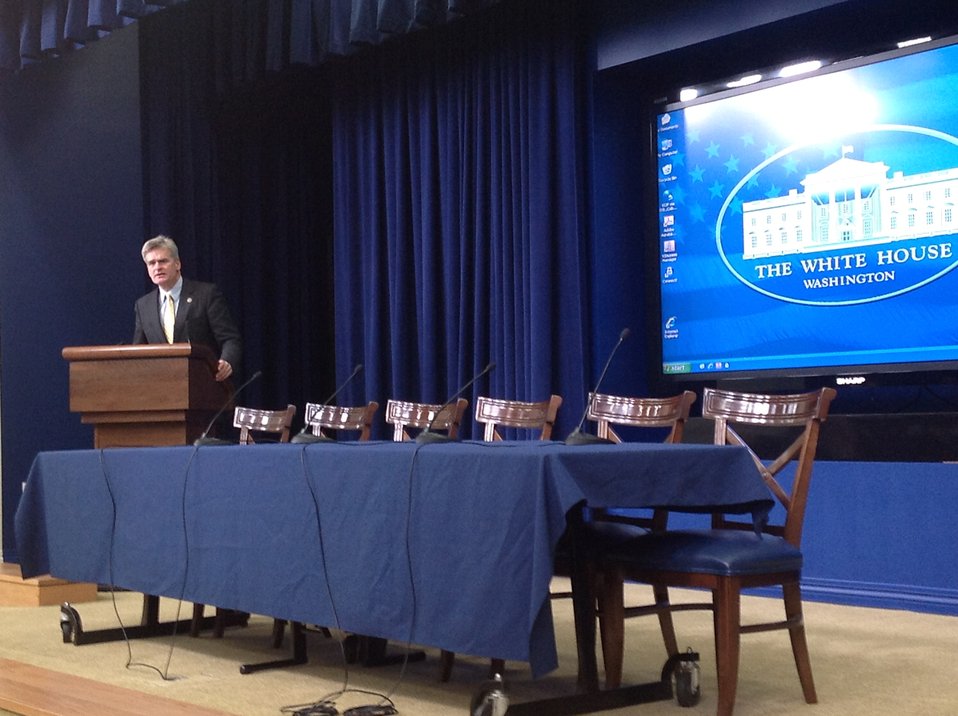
Rep. Bill Cassidy

WH 2012 World Hepatitis Day Event